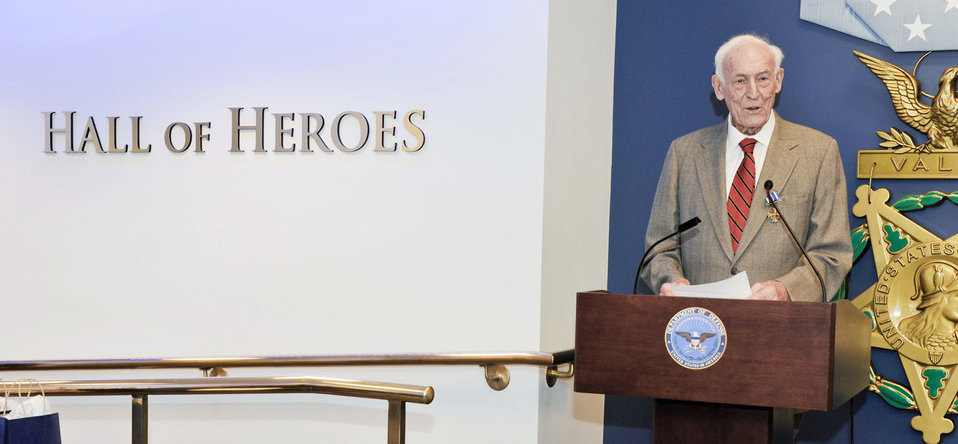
World War II veteran receives Distinguished Flying Cross in Pentagon ceremony

Retired Col. Claude M. Schonberger addresses an audience following the presentation of his Distinguished Flying Cross July 19, 2010, in the Pentagon's Hall of Heroes. He received the award for a mission during World War II.